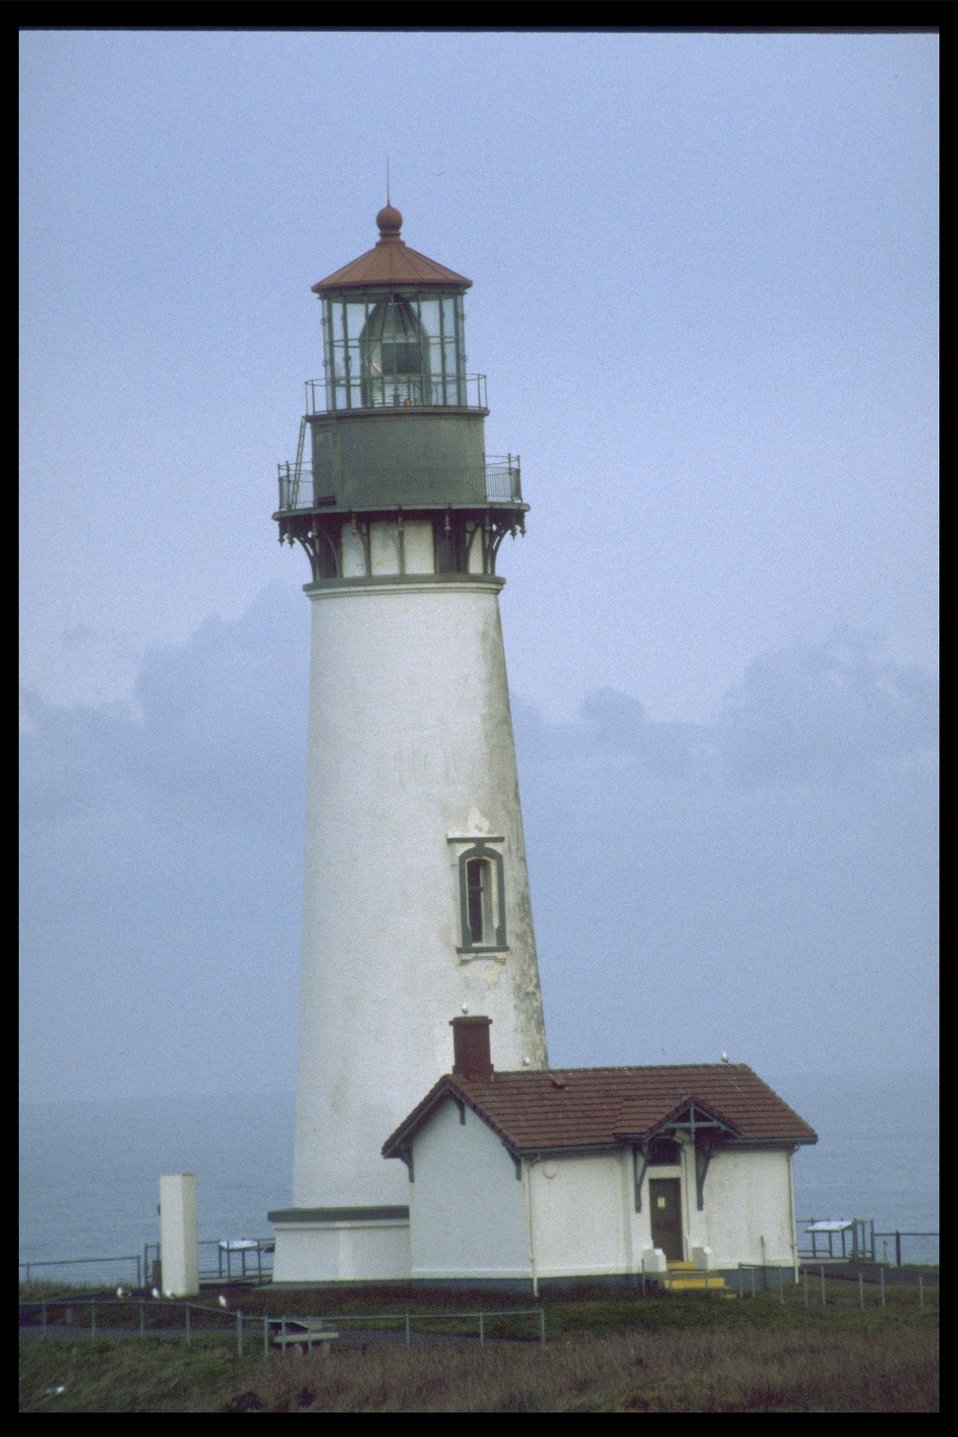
Yaquina Head Lighthouse.